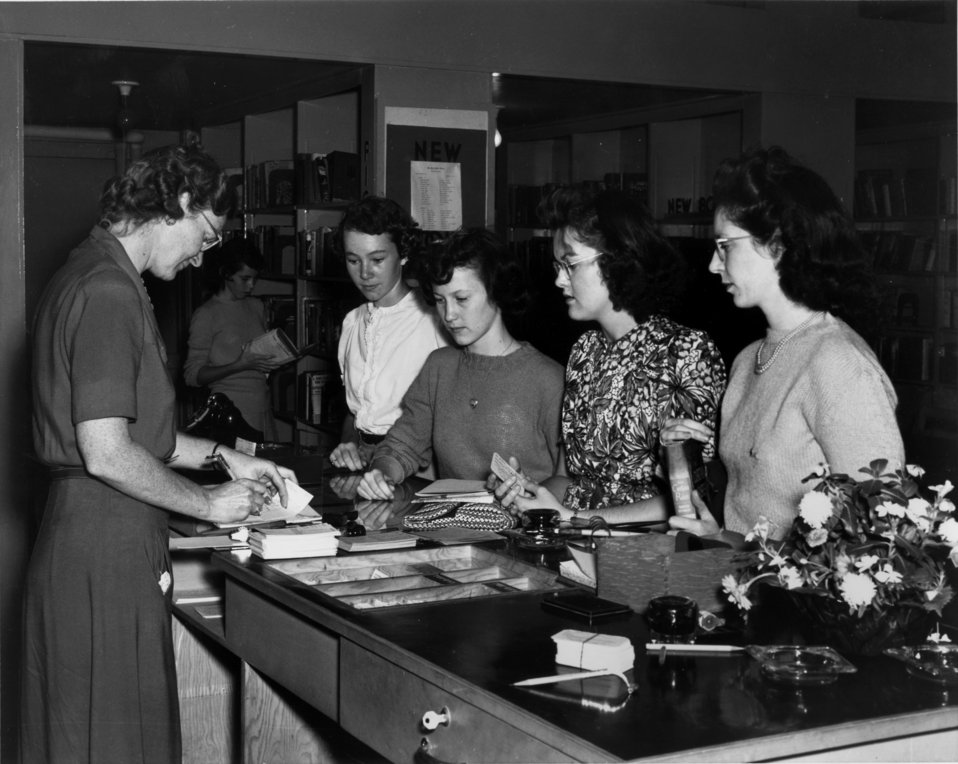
Check Out Desk at Library Oak Ridge

PRO-45 DOE photo by Ed Westcott 9-1944 Oak Ridge Tennessee